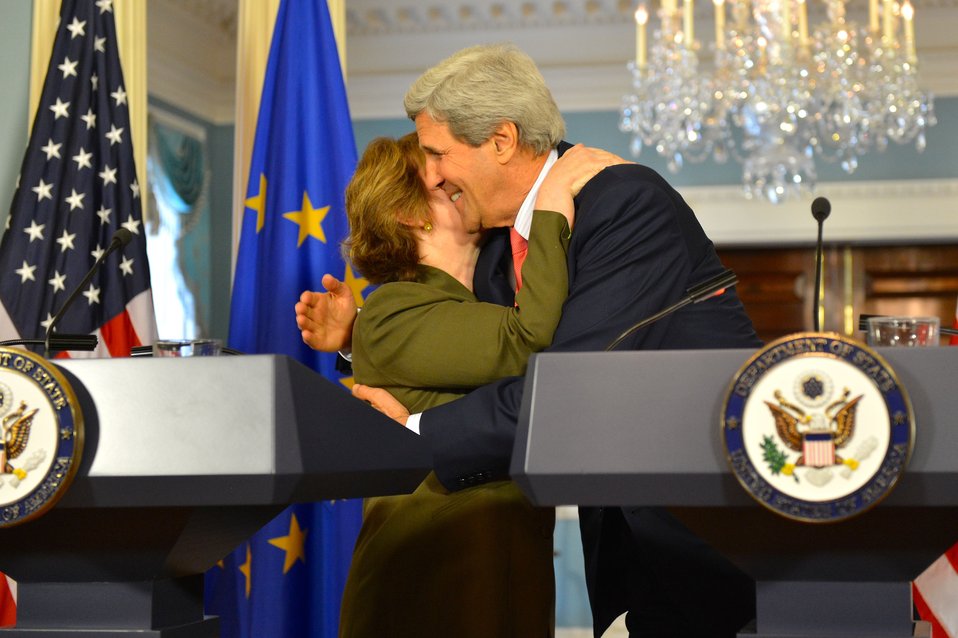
Secretary Kerry and EU High Representative Ashton Hug After Addressing Reporters

U.S. Secretary of State John Kerry and EU High Representative Lady Catherine Ashton hug after holding a joint press conference at the U.S. Department of State in Washington, D.C., on May 6, 2014.